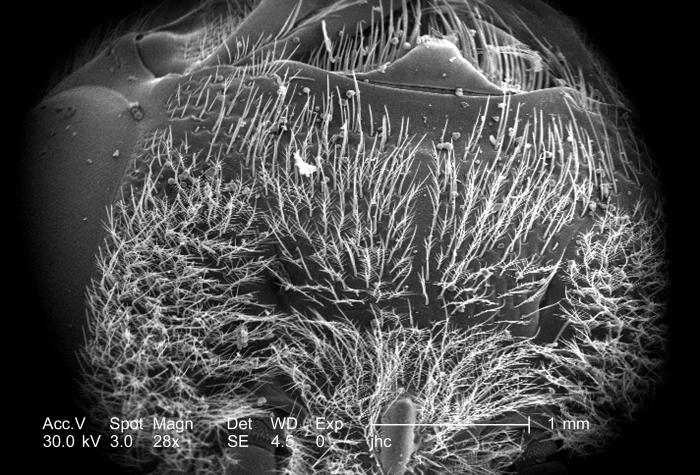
Under a low magnification of only 28x, this scanning electron micrograph (SEM) depicted some of the ultrastructural morphologic features displayed on the surface of a carpenter bee's, Xylocopa virginica head. This particular bee was found deceased on the grounds of the Decatur, Georgia suburbs, an area where these insects are quite common. Carpenter bees can be quite a nuisance, for they are well known as wood-borers, and can create many unsightly holes in a home's wooden components.